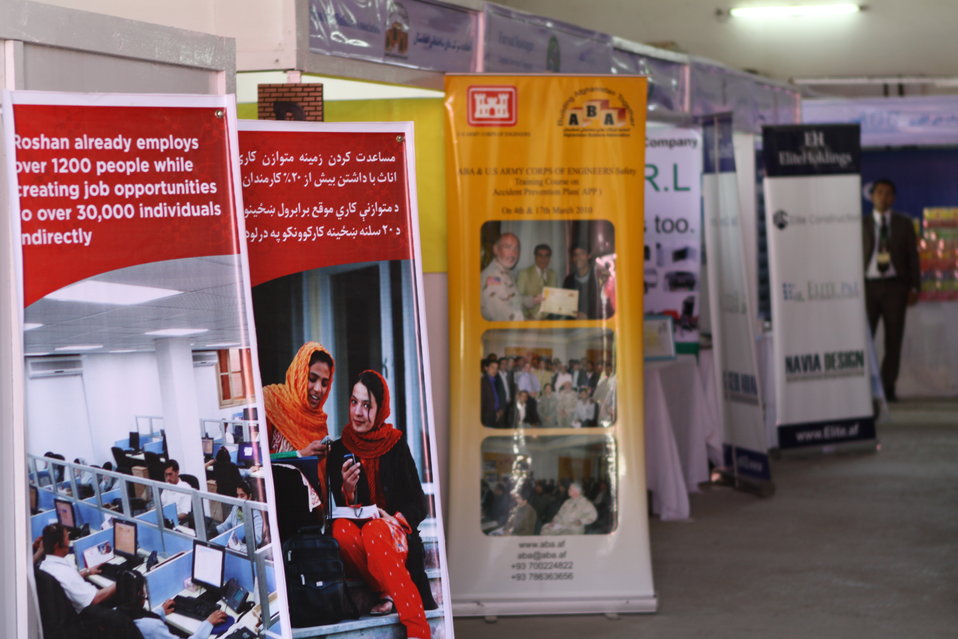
100522 ATVI Graduation 077